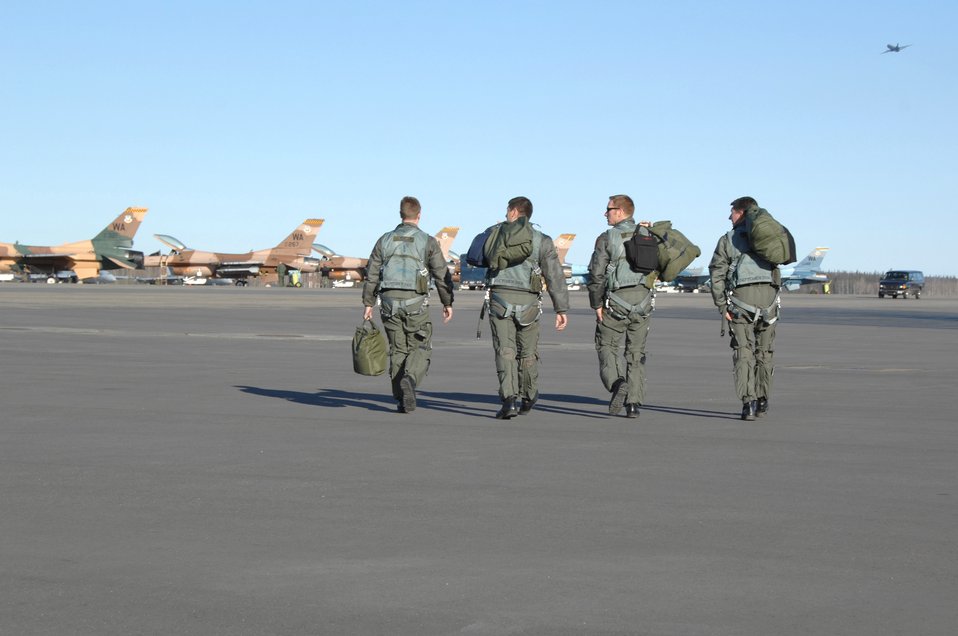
First 2007 RF-A exercise ends on positive note

Four F-16 Fighting Falcon pilots step to their jets prior to a mission April 17 during Red Flag-Alaska exercise at Eielson Air Force Base, Alaska. Red Flag-Alaska is a Pacific Air Forces-directed field training exercise for U.S. forces flown under simulated air combat conditions. It is conducted on the Pacific Alaskan Range Complex with air operations flown out of Eielson and Elmendorf Air Force Bases. The Airmen are from the 64th Aggressor Squadron at Nellis Air Force Base, Nevada.